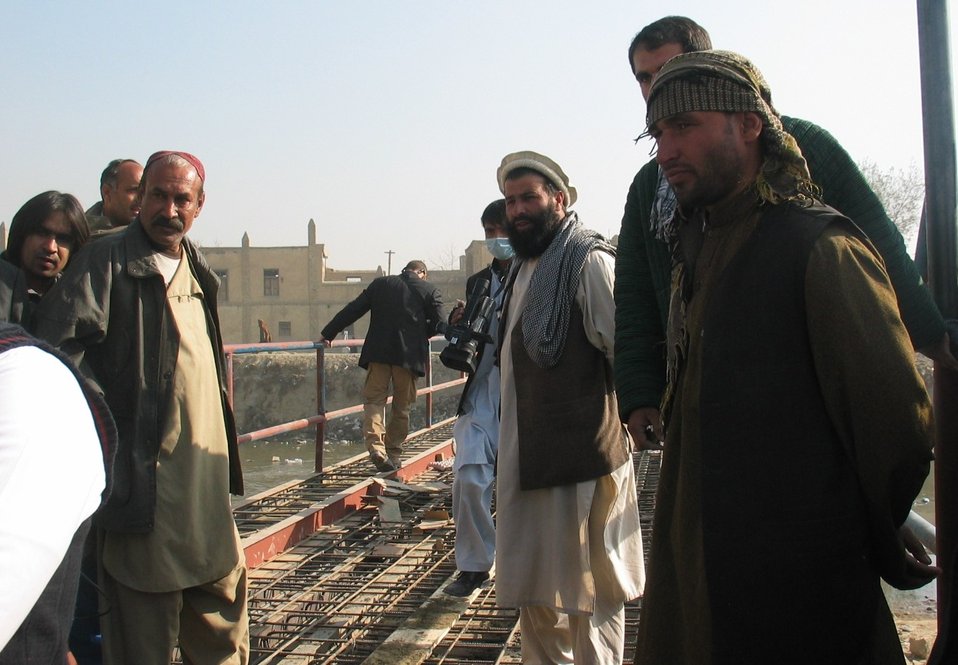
Kabul River Bridge Renovation, December 3, 2010